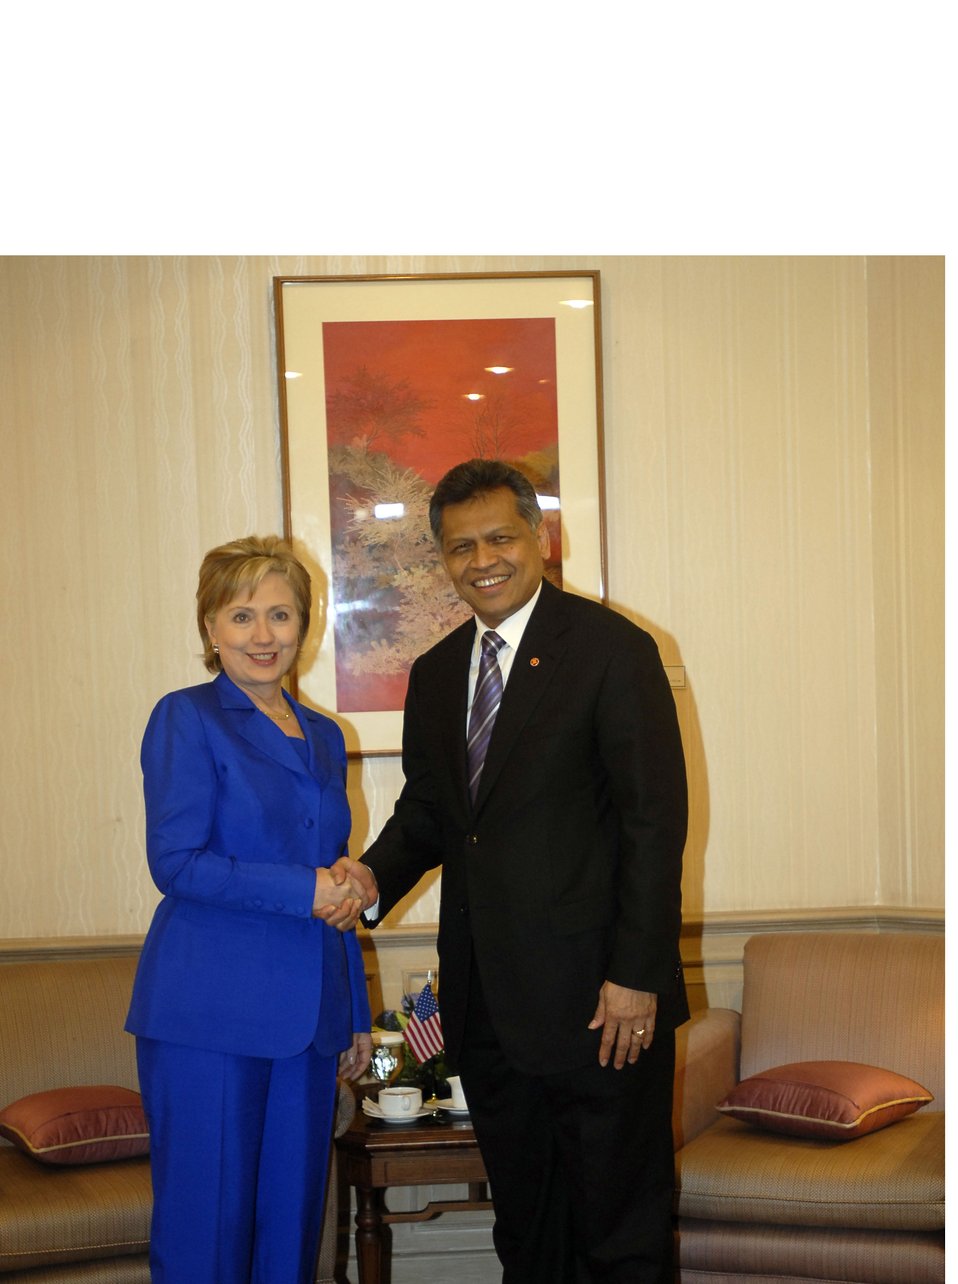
Secretary Clinton and ASEAN Secretary General Pitsuwan

Secretary Clinton with ASEAN Secretary General, Dr. Surin Pitsuwan in Jakarta, Indonesia February 19, 2009.